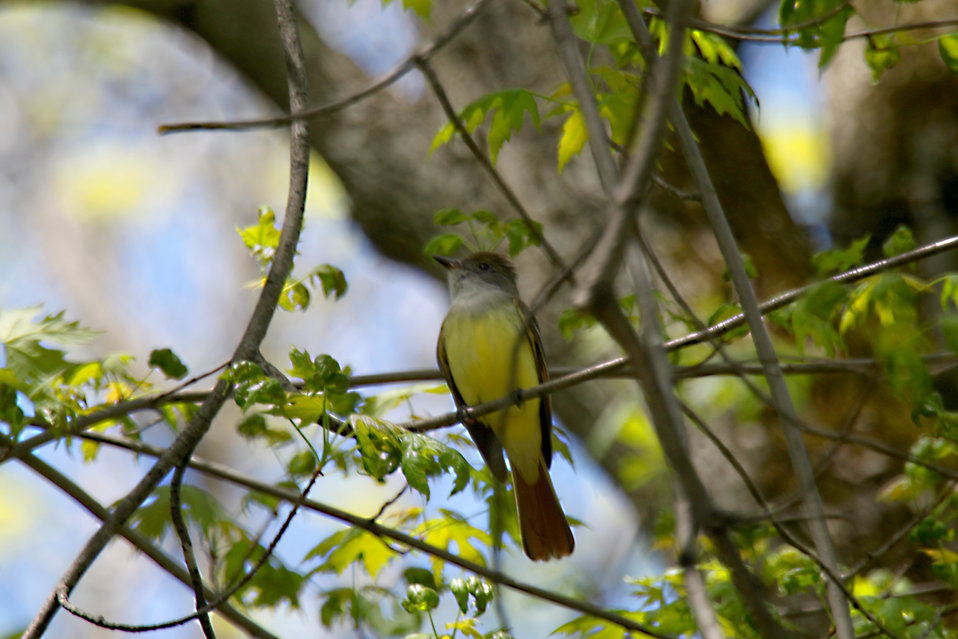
Great Crested Flycatcher-Missisquoi NWR
Photo Credit: Ken Sturm; USFWS